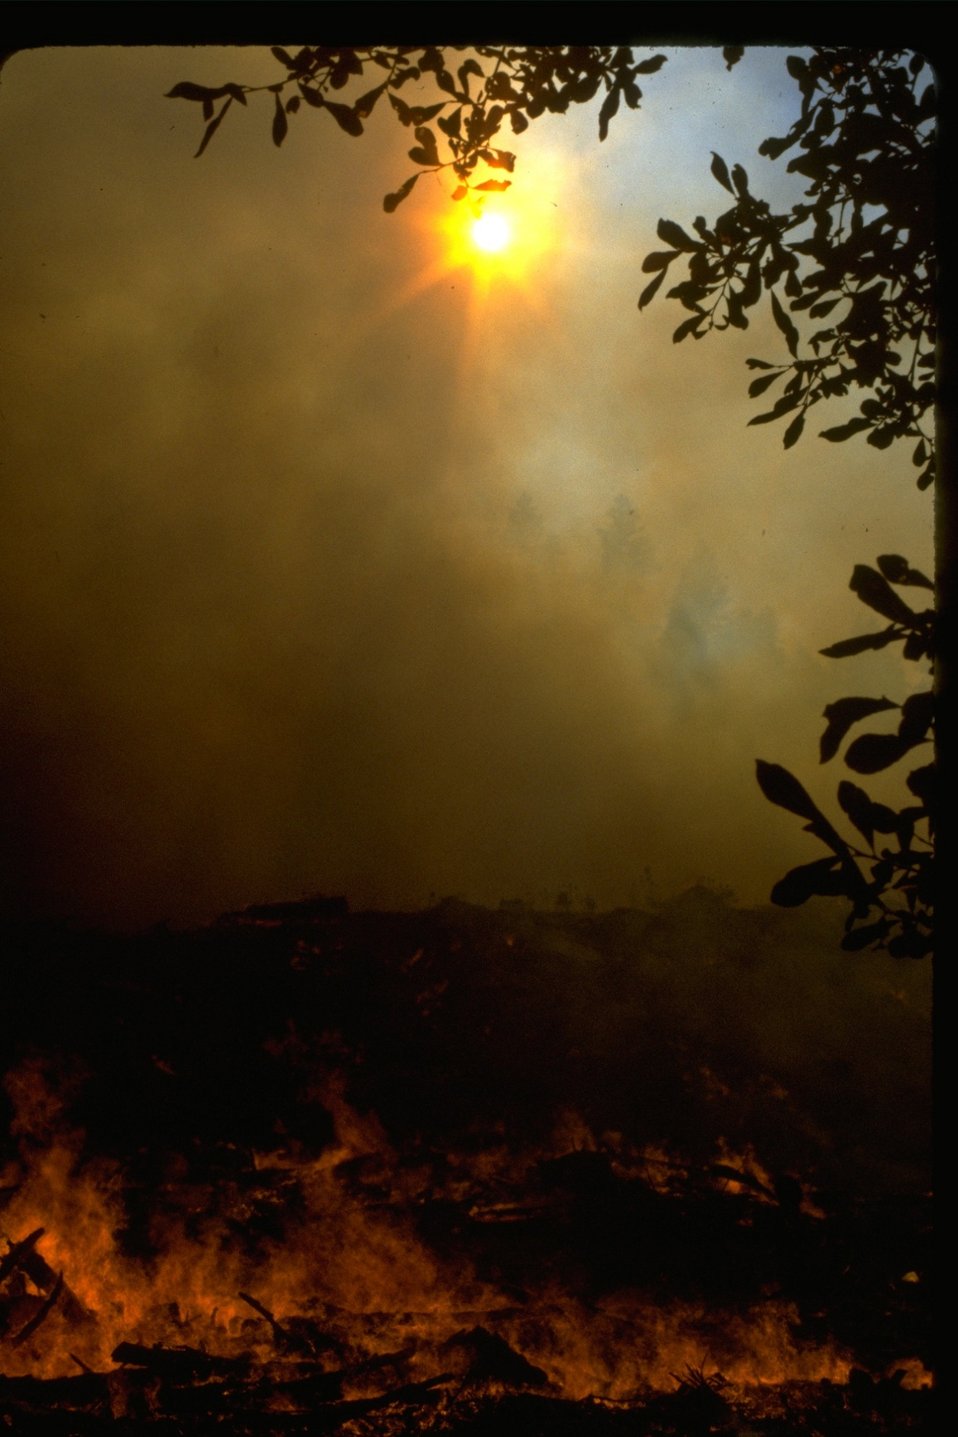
Sun shining through the dark smoke coming from the fire.